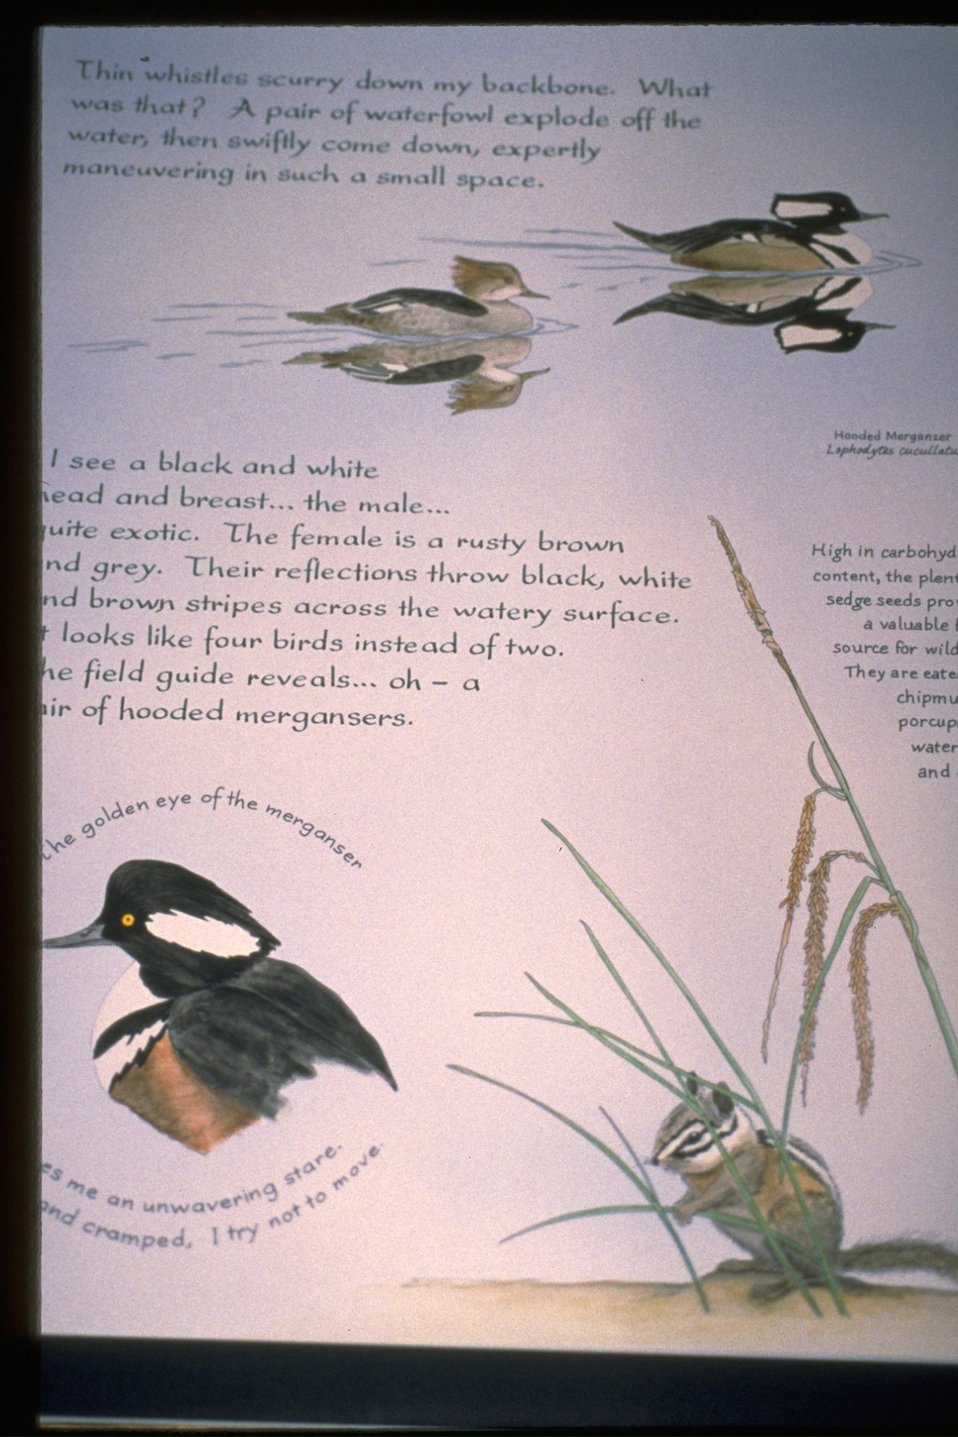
Interpretive Panels: Boardwalk Trail Journals.